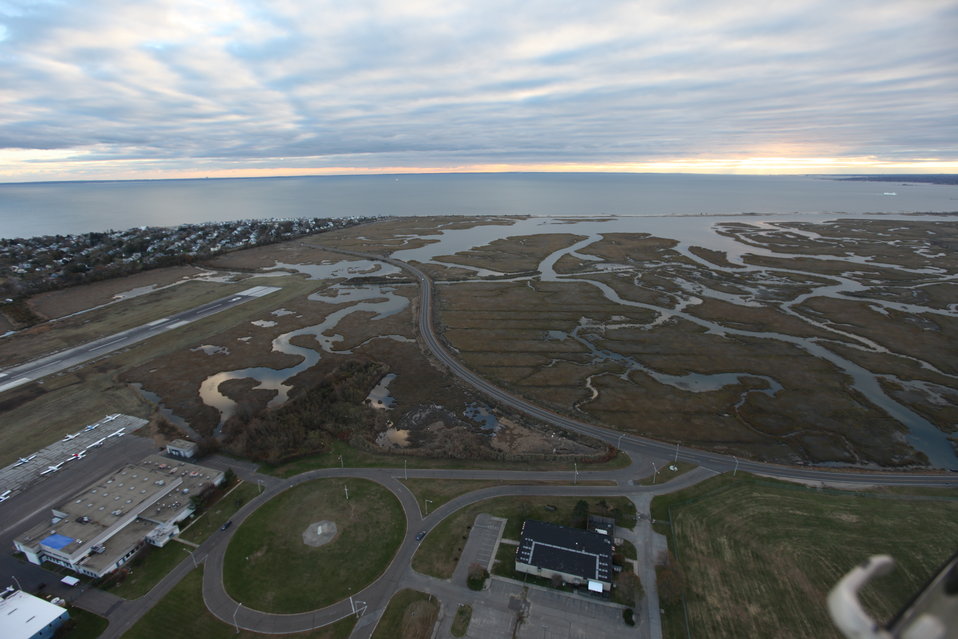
Stewart B. McKinney National Wildlife Refuge-Great Marsh (CT)

An aerial view of Great Marsh at Stewart B. McKinney National Wildlife Refuge in the aftermath of storm Sandy.